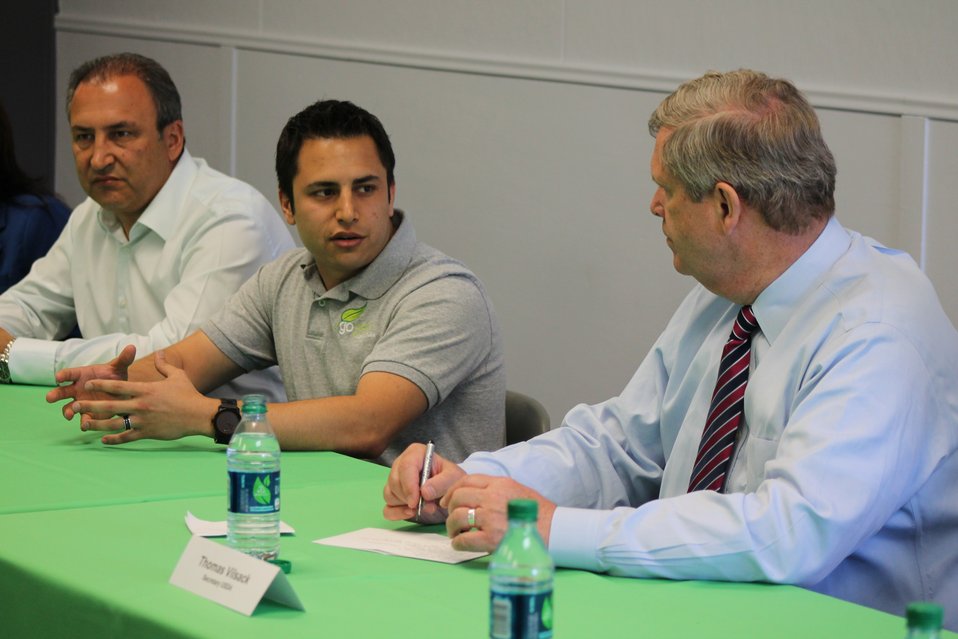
GoGreen Agriculture Chief Executive Officer Pierre Suleiman talks to Agriculture Secretary Tom Vilsack about the issues organic producers face getting their produce to market in Encinitas, CA on Apr. 17, 2013. GoGreen Agriculture is a family owned and operated hydroponics organic producer of lettuce, kale and spinach. GoGreen builds mini-farms in or near large cities and sells the premium produce locally. This eliminates major transportation time and cost, improves freshness, reduces petroleum consumption, and provides local jobs.